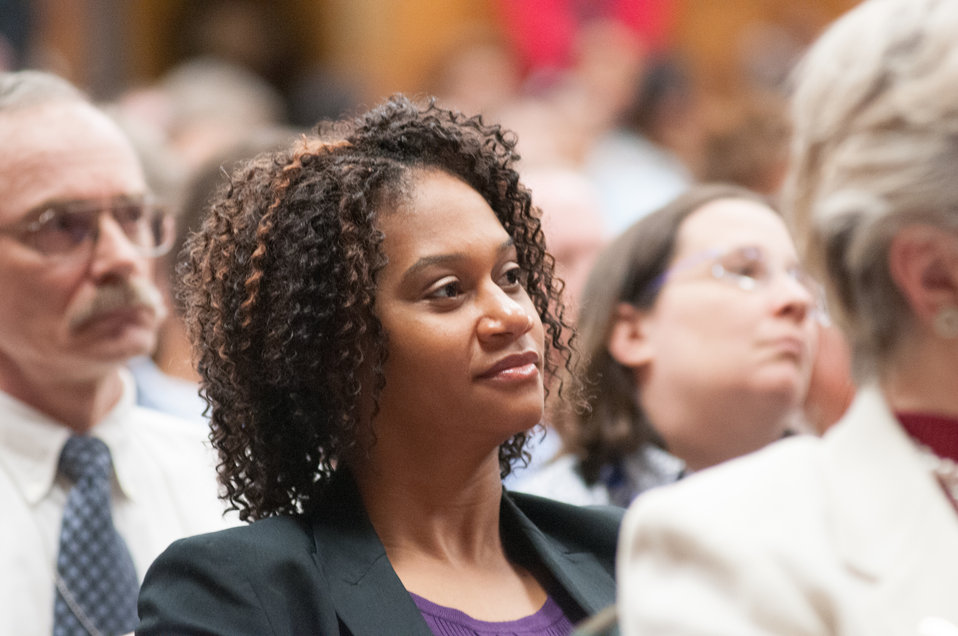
An U.S. Department of Agriculture (USDA) audience listen to the speakers, during the 2013 Women’s History Month Observance event, “Women Inspiring Innovation Through Imagination: Celebrating Women in Science, Technology, Engineering, and Mathematics, on Thursday, March 21, 2013, in Washington, D.C. The keynote speaker is American Association of University Women Executive Director and CEO Linda Hallman. Additional remarks were made by Agriculture Deputy Secretary Dr. Kathleen Merrigan; Rural Development Acting Deputy Under Secretary Judith Canales; Administration Deputy Assistant Secretary Deputy Assistant Secretary Robin Heard; and Agriculture Research Service National Programs Associate Administrator Dr. Chavonda Jacobs-Young.